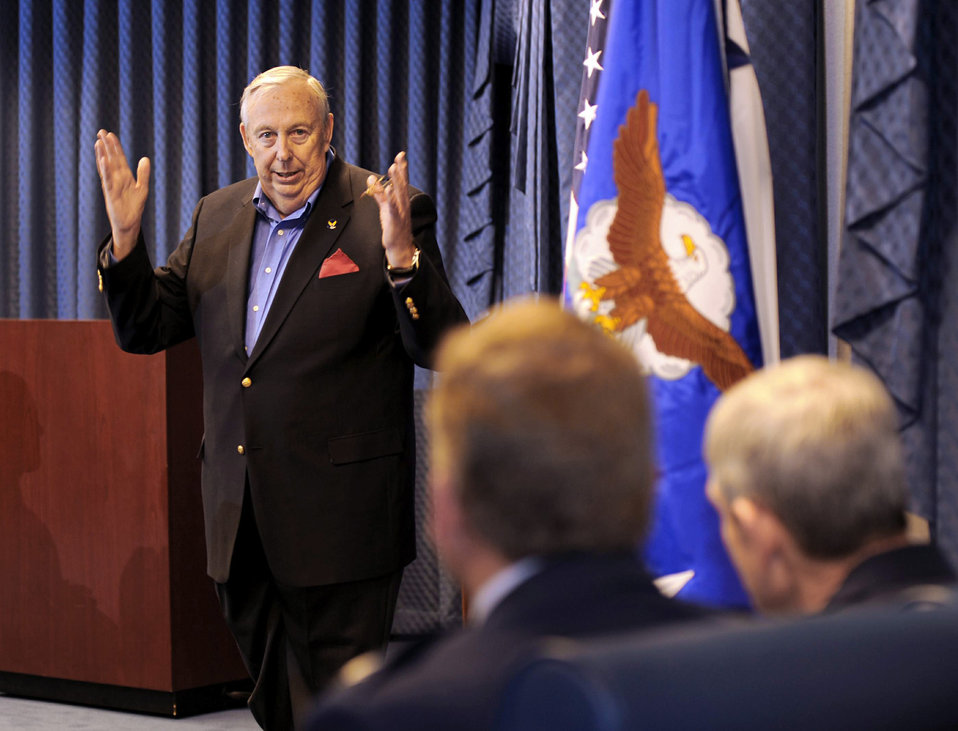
Dr. James G. Roche award

Dr. James G. Roche, former Secretary of the Air Force, speaks before the presentation of an award named in his honor at a ceremony at the Pentagon on April 11, 2011. The B-2 Division at Wright-Patterson Air Force Base, Ohio, won the 2010 Dr. James G. Roche Sustainment Excellence Award for demonstrating the most improved performance in aircraft maintenance and logistics readiness.